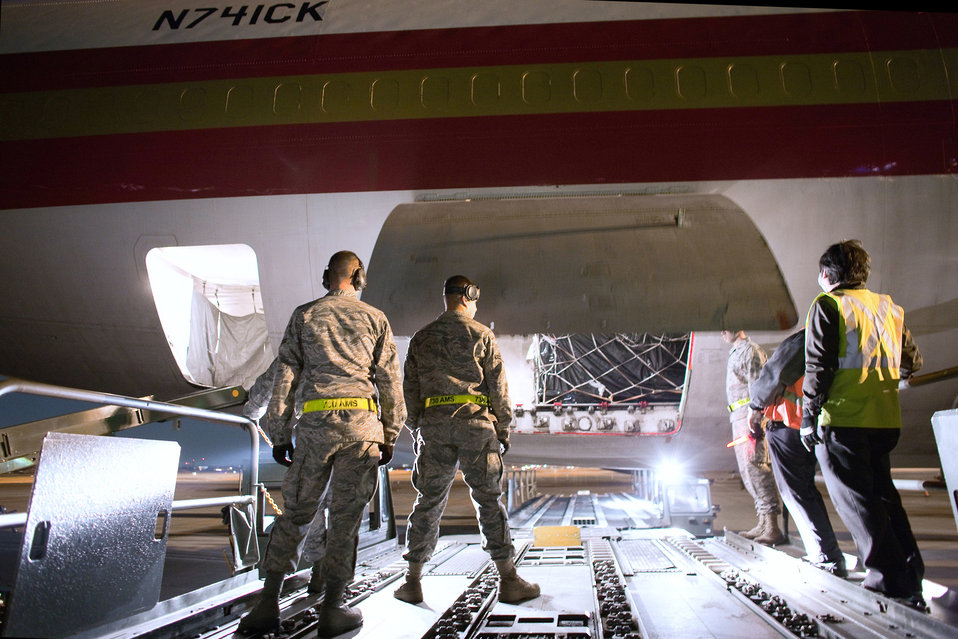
Delivery supplies arrive at Yokota

YOKOTA AIR BASE, Japan -- Members of the 730th Air Mobility Squadron wait to unload supplies on a K-loader here March 19. An international charter aircraft delivered 95 tons of blankets, plastic sheeting, hygiene supplies, soap and jerry cans to assist with earthquake and tsunami relief efforts.